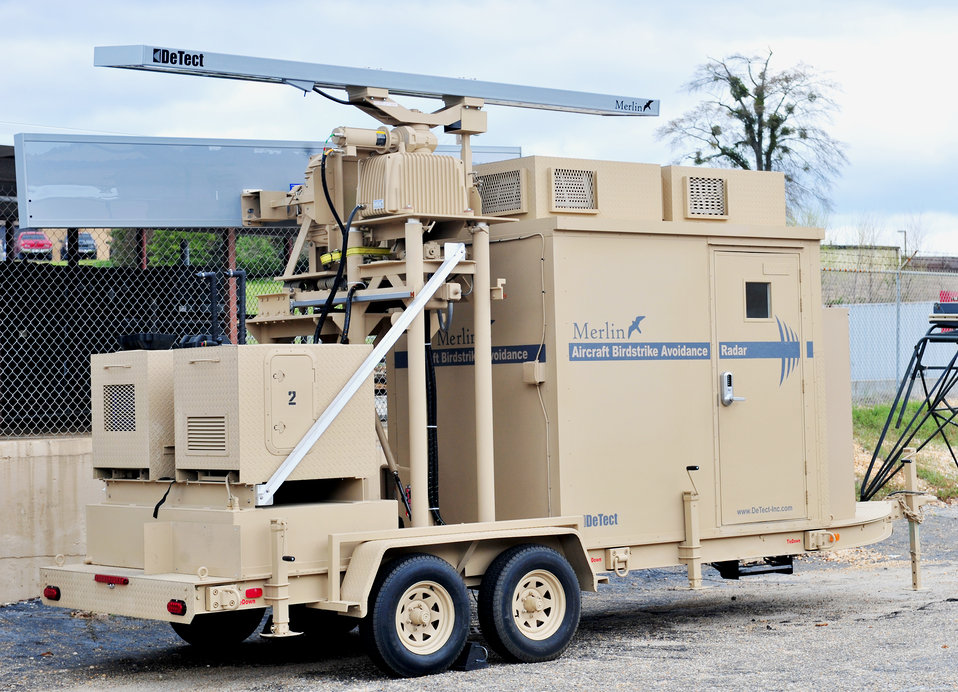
Radar bound for Bagram will help pilots avoid birds

A Merlin Aircraft Birdstrike Avoidance Radar System is shown at Shaw Air Force Base, S.C. The MABARS is currently being delivered to Bagram Airfield, Afghanistan.